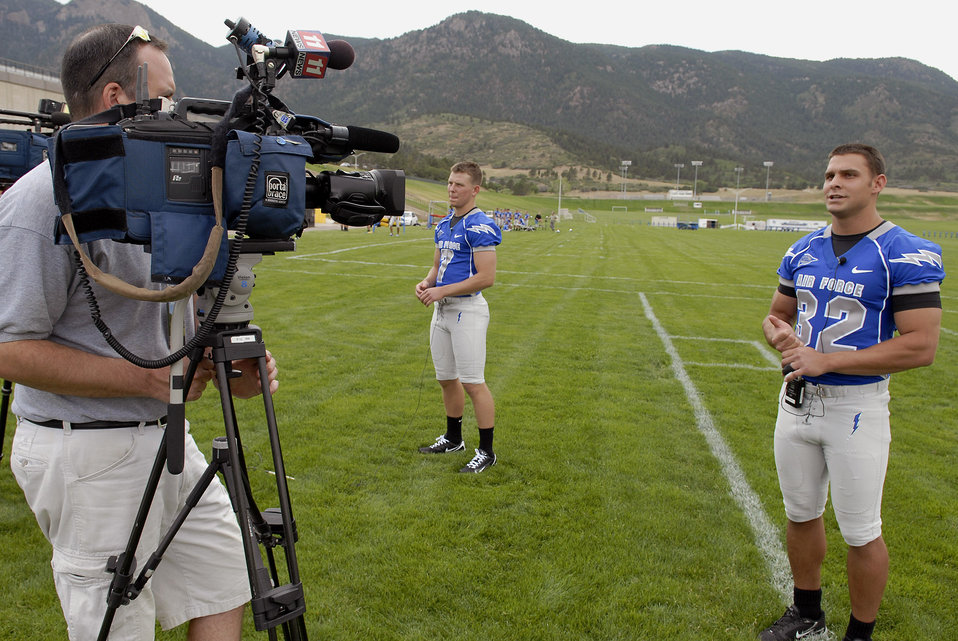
First day of football practice at the Academy

Outside linebacker Cadet 1st Class Hunter Altman (32) and quarterback Cadet 2nd Class Eric Herbort (7) talk to the media July 30 at the U.S. Air Force Academy in Colorado.